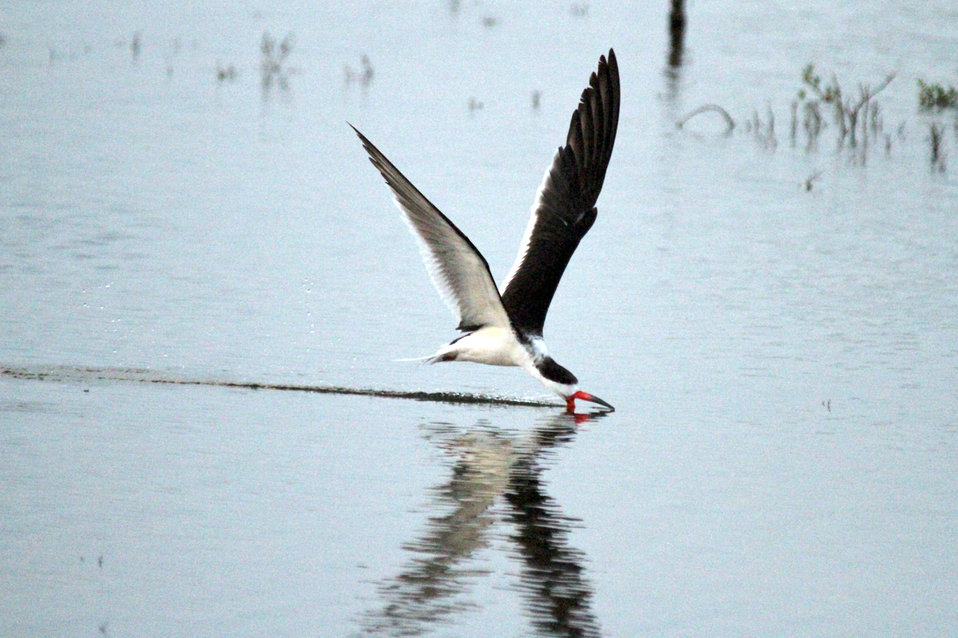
Black Skimmer on the water

Black Skimmer landing on the water